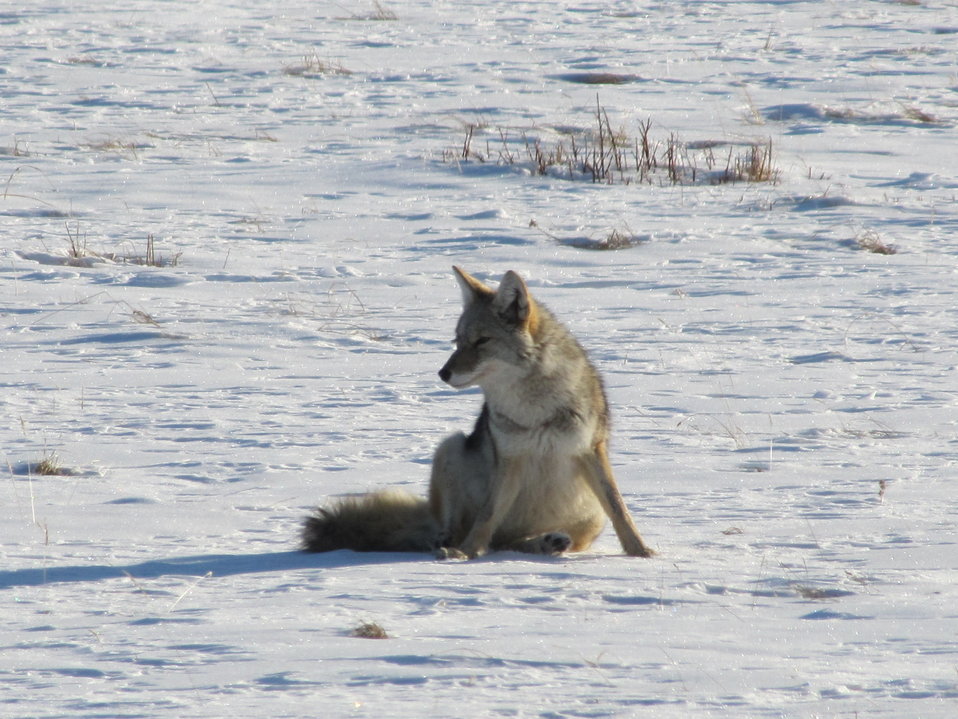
Taking a Break

A coyote takes a break from hunting on a sunny winter morning.